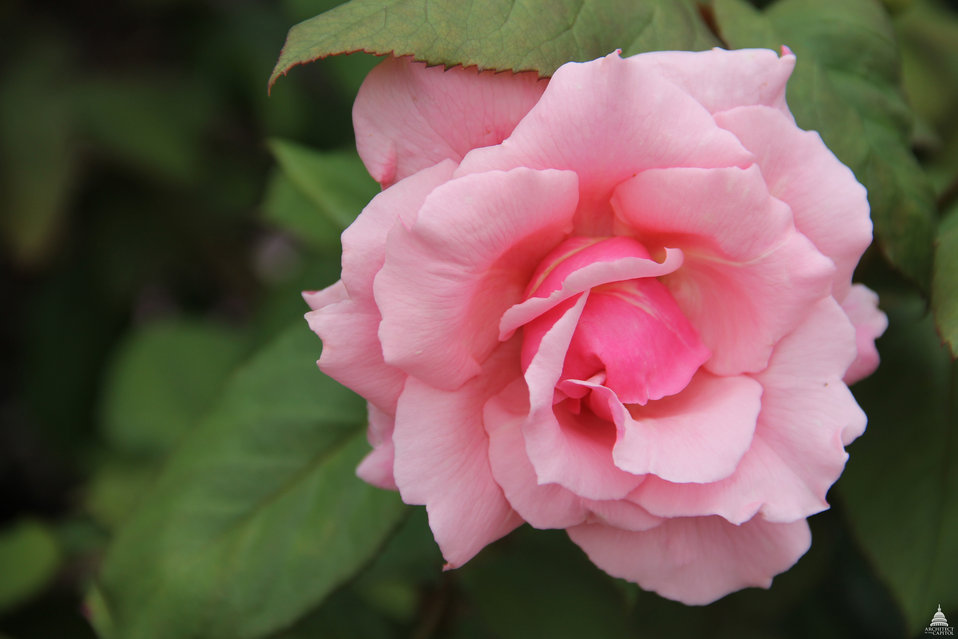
In Bloom at the National Garden - May 2012

Open daily from 10 a.m. to 5 p.m. the National Garden is located adjacent to the U.S. Botanic Garden. The National Garden was created as a place for visitors to experience the diversity of plants, including the rose, America's national flower. It was authorized by Congress in 1988 and opened to the public on October 1, 2006. The National Garden provides 'living laboratories' for environmental, horticultural, and botanical education in a contemplative setting.